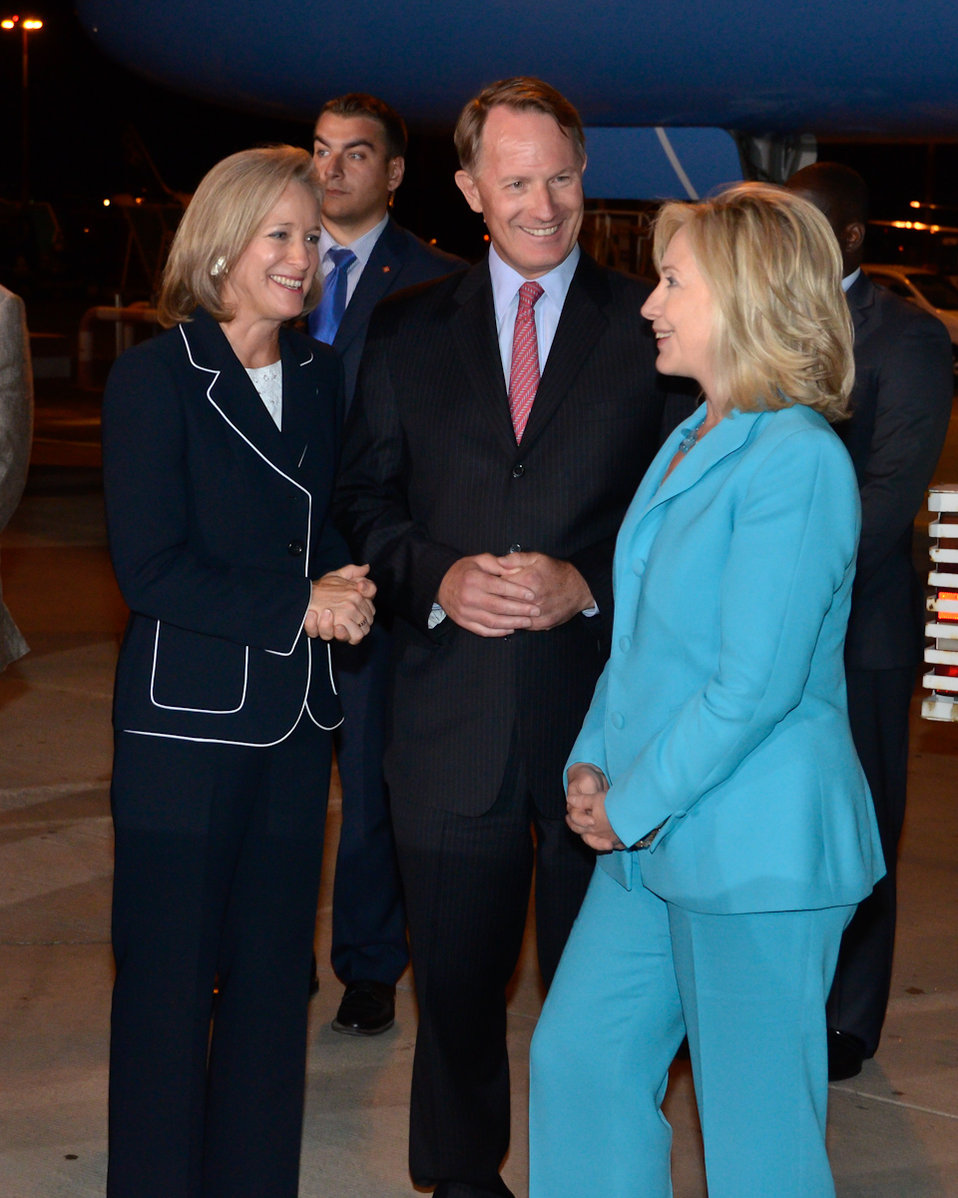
Secretary Clinton Is Greeted By Ambassador Smith and Mrs. Smith

U.S. Secretary of State Hillary Rodham Clinton is greeted by U.S. Ambassador to Greece Daniel Bennett Smith and Mrs. Smith, left, upon her arrival to Athens, Greece, on July 16, 2011.